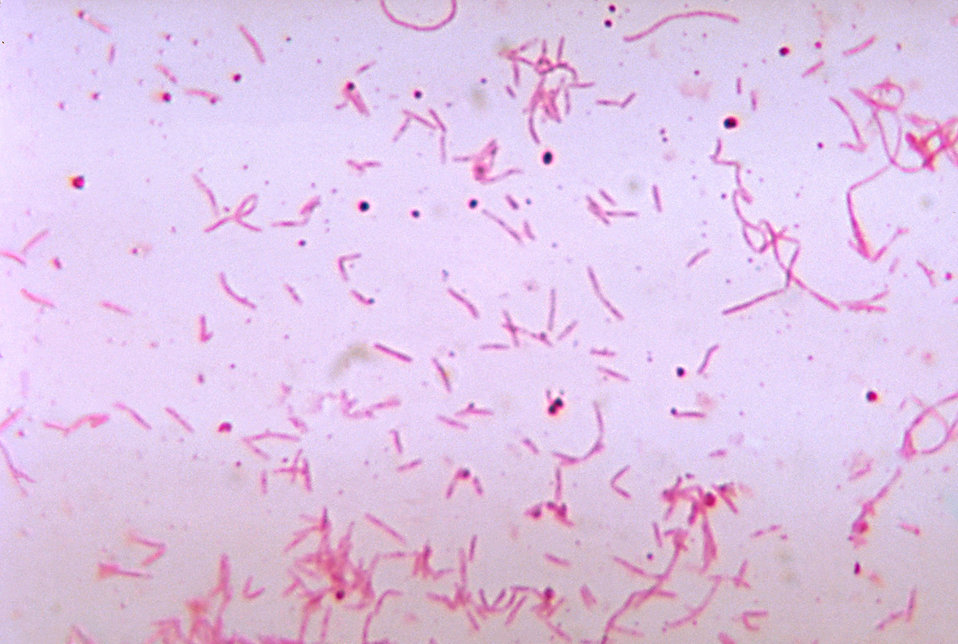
This photomicrograph shows the bacterium Fusobacterium russii cultured in a thioglycollate medium for 48 hours.